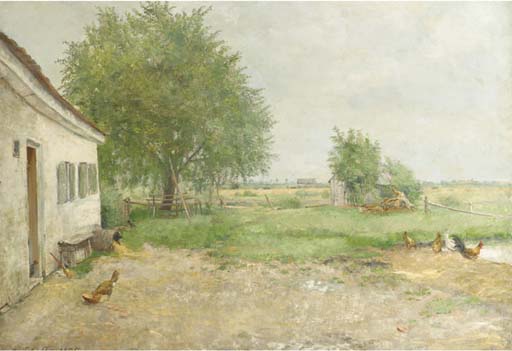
Deutsch: Landschaft mit Bauernhof A farmyard in an extensive landscape. Signed and dated Ad. Glatte 1897. Oil on canvas, 70 x 99 cm.